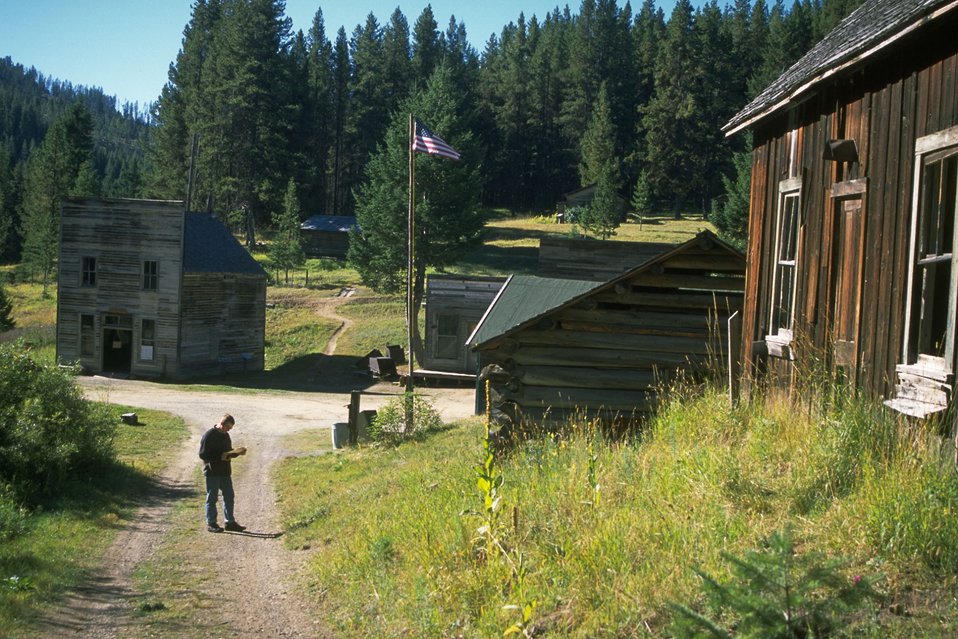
Downtown Garnet from Dublin Gultch with visitor.